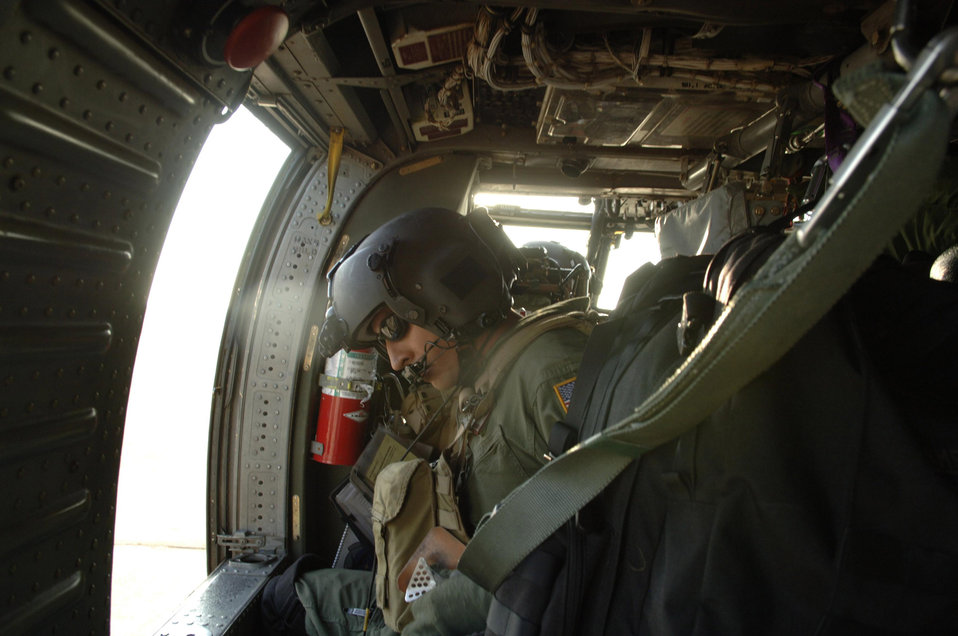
Rescue squadrons provide support for Hurricane Gustav

Staff Sgt. Andy Pena performs in-flight calibrations on a HH-60 Pave Hawk while flying Sept. 3 over Ellington Field, Texas. He and members of the 55th Rescue Squadron deployed from Davis-Mothan Air Force Base, Ariz., to Ellington Field in response to Hurricane Gustav with less than 24 hours after notification. Sergeant Pena is an aerial gunner.